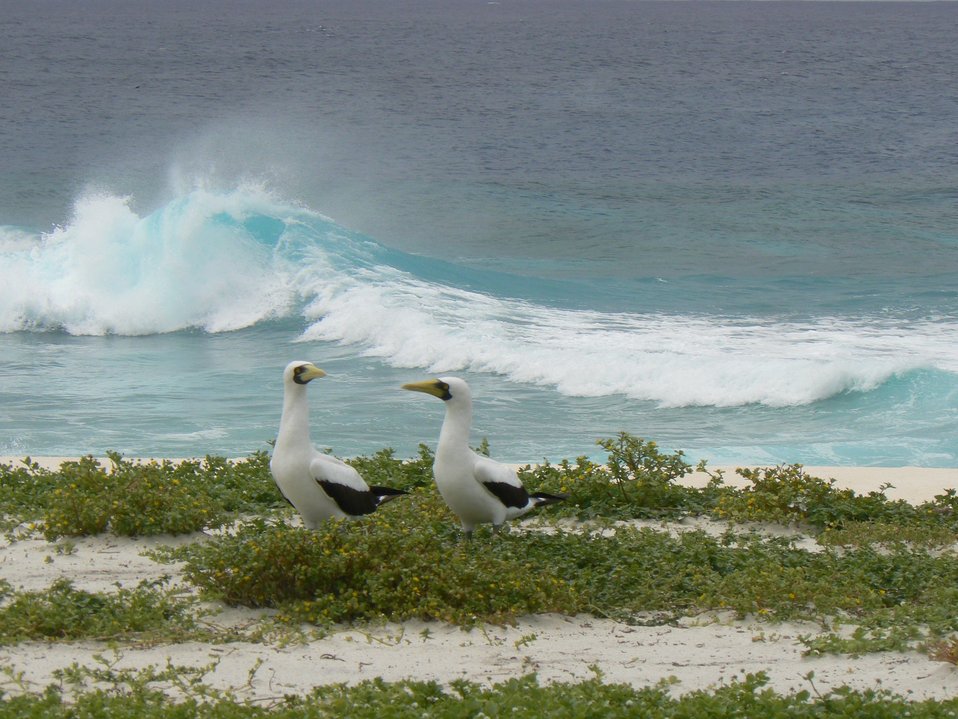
Masked boobies on Baker Island NWR

Two masked boobies patrol the shoreline on Baker Island National Wildlife Refuge in the Pacific Ocean 1,600 miles southwest of Honolulu. (USFWS)